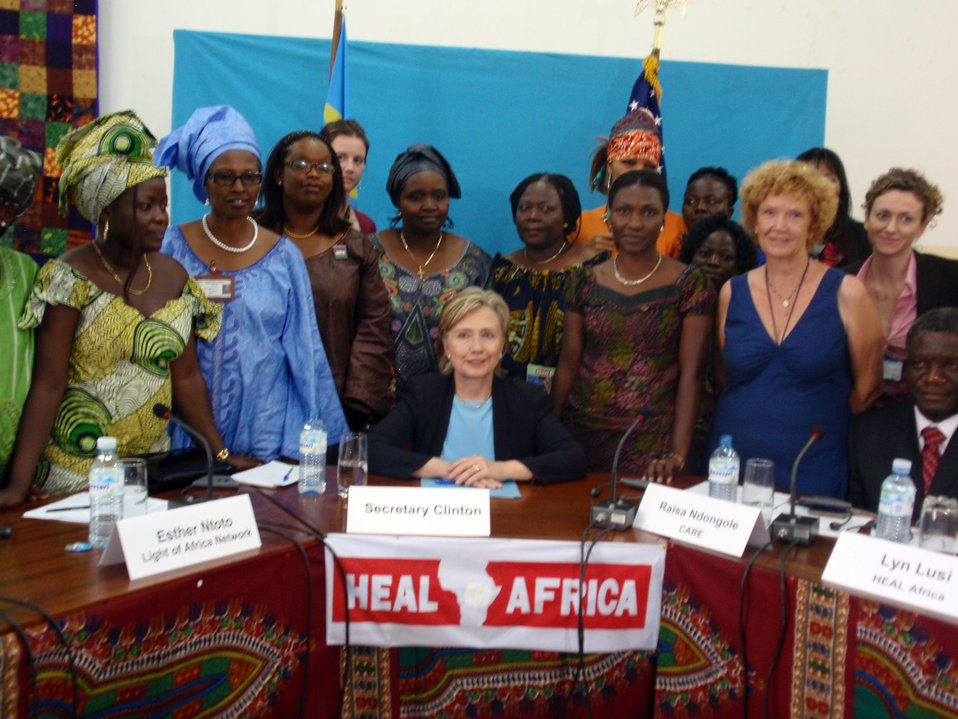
Secretary Clinton Visits Heal Africa Facilities in Goma

U.S. Secretary of State Hillary Rodham Clinton poses for a photo with staff at the Heal Africa facilities in Goma, Democratic Republic of Congo August 11, 2009.